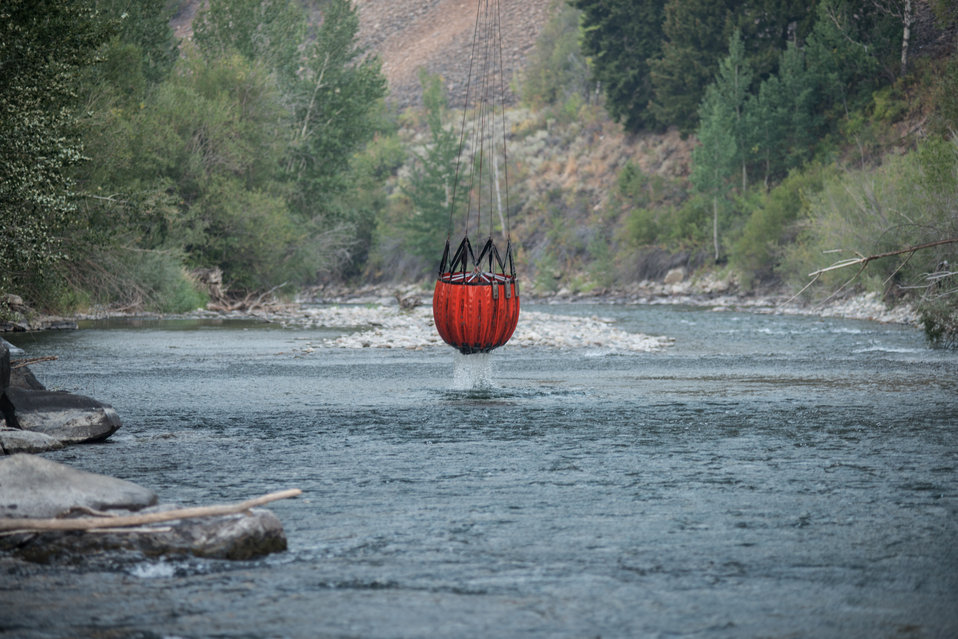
A Bell UH-1H helicopter lifts a full Bambi Bucket, a collapsible bucket utilizing a pilot-controlled release valve, that is able to deliver a concentrated column of water from the helicopter to the fire on the Carbonate Ridge, rising behind the Wood River, during Beaver Creek Fire, west of Hailey, ID, on Monday, Aug 19, 2013.